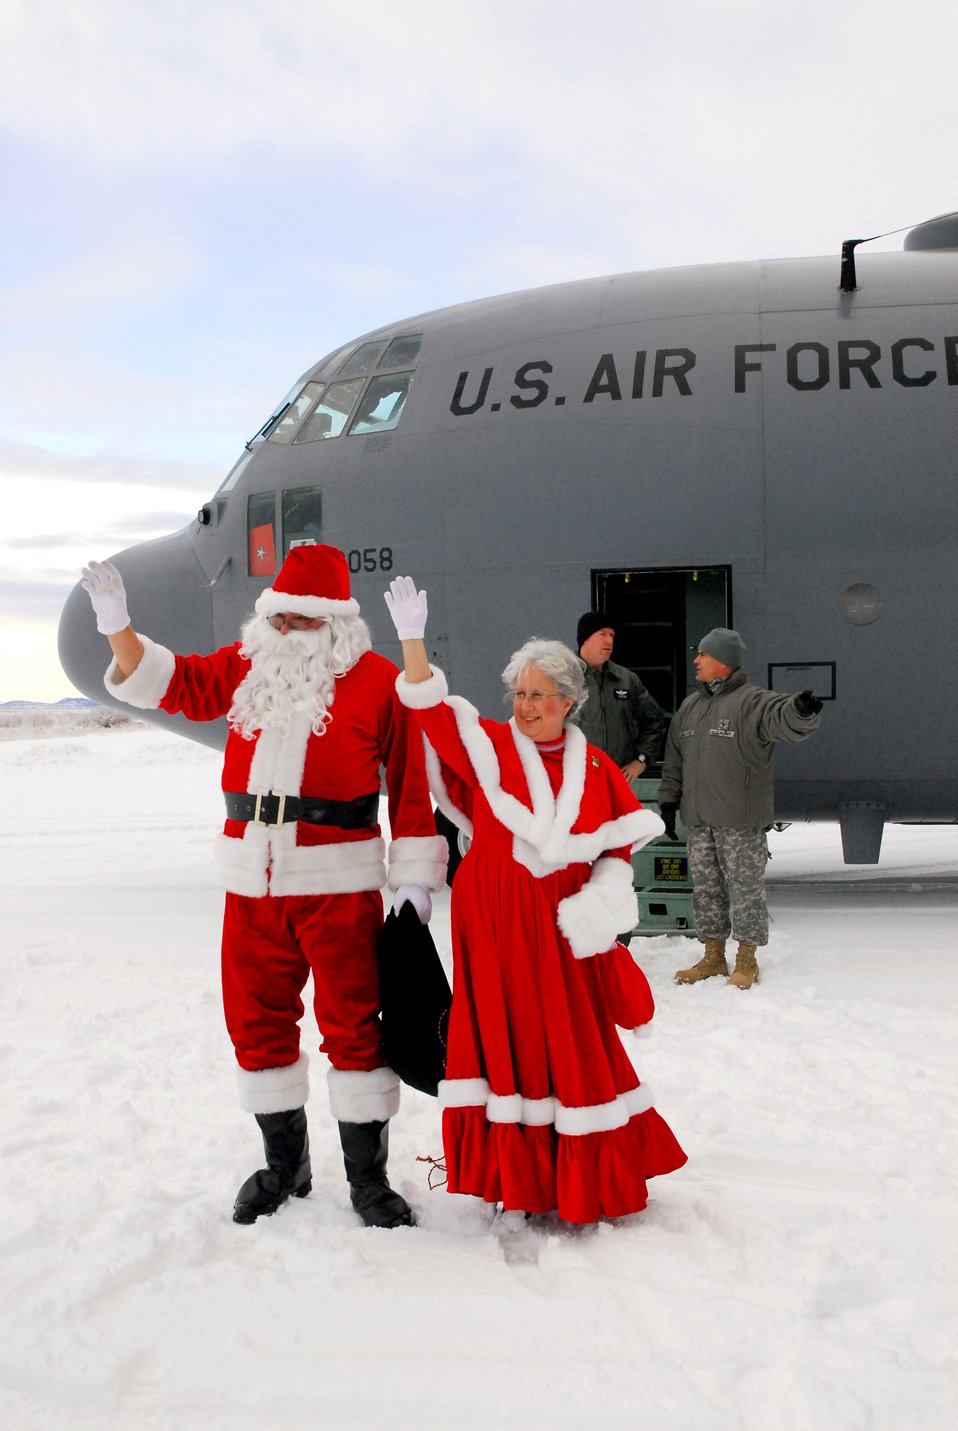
Alaska Guard conducts Operation Santa Claus

Santa and Mrs. Claus disembark from an Air National Guard C-130 Hercules that brought them to Togiak, Alaska, Nov. 13 for Operation Santa Claus. Alaska National Guard members are bringing Christmas early to children in remote Alaskan villages.